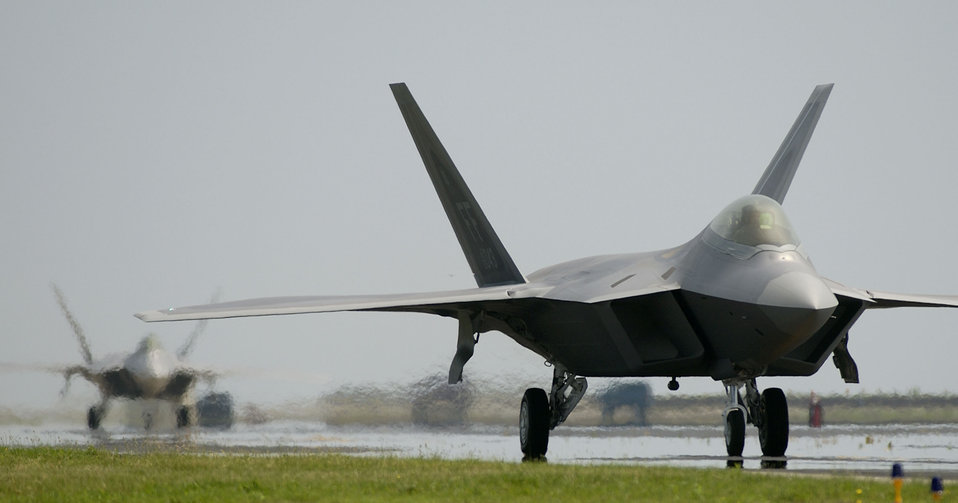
AFMC on track to deliver more F-22s

Air Force officials have received authorization from Congress for more F-22 Raptors. Some 90 Raptors have been delivered to the Air Force to date. The 478th Aeronautical Systems Wing at Wright-Patterson Air Force Base is overseeing the production, delivery and fielding of addtional F-22s.